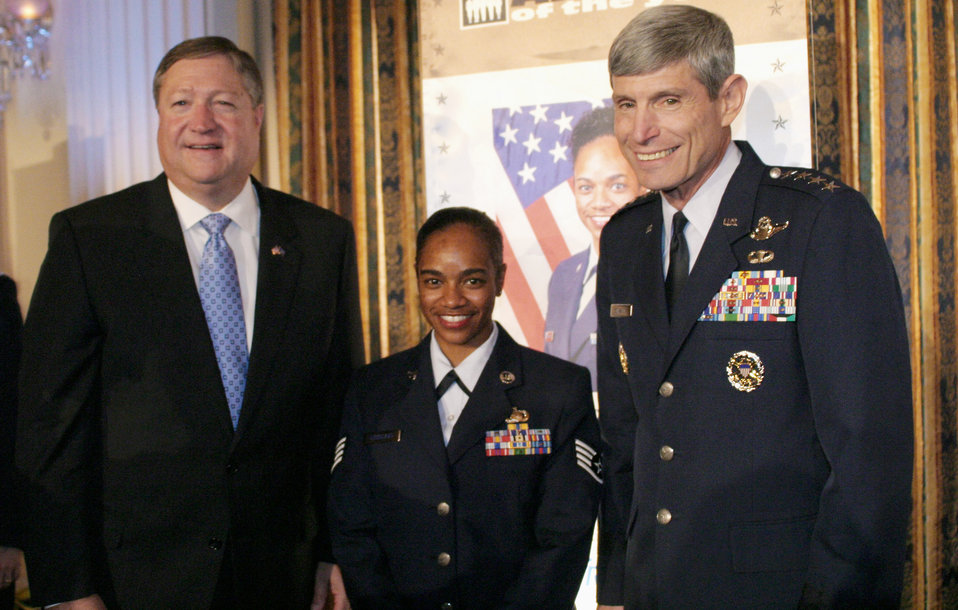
MSMOY

Staff Sgt. MercedesKimble L. Crossland is the 2009 Service Member of the Year for the Air Force. The Army Times Publishing Company and several other businesses sponsor the annual award. Sergeant Crossland received congratulations from civilians and military representatives including Secretary of the Air Force Michael B. Donley and Air Force Chief of Staff Gen. Norton Schwartz. The servicemembers were recognized at a special ceremony July 9 on Capitol Hill.